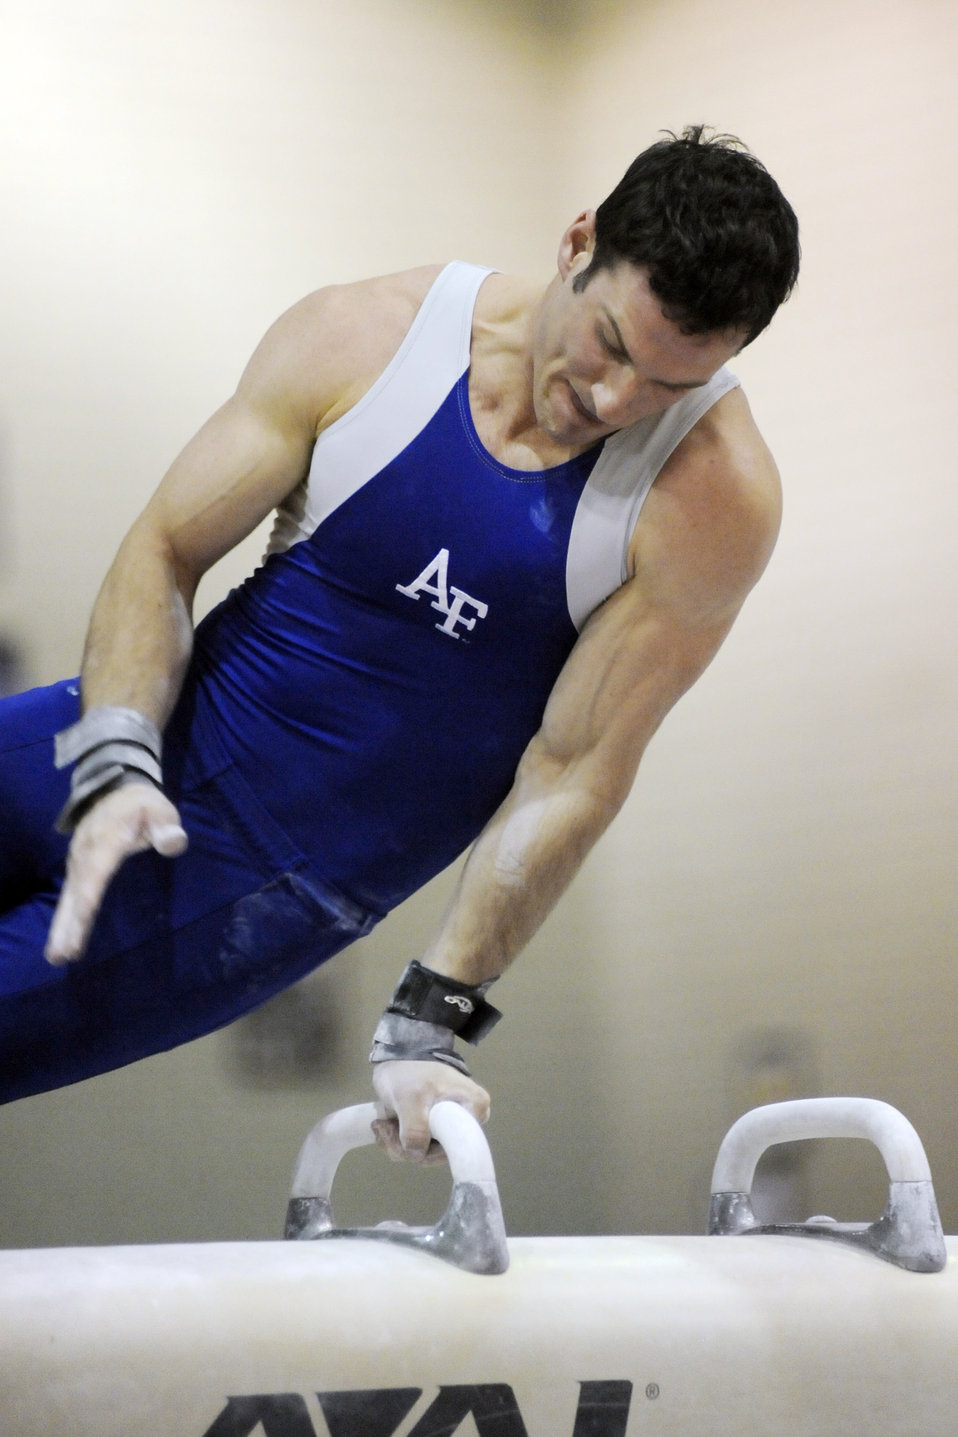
Falcon gymnasts lose in home final

Air Force senior Garrett Canter competes on the pommel horse during the Falcons home finale against Illinois-Chicago at the U. S. Air Force Academy's cadet gymnasium in Colorado March 7, 2010. The Falcons set a new team record, beating their previous record of 342.55 which was set last year in Arizona, but fell to Illinois-Chicago 348.60 - 346.45. Canter scored two career best scores on the still rings (14.00) and the high bar (13.85).